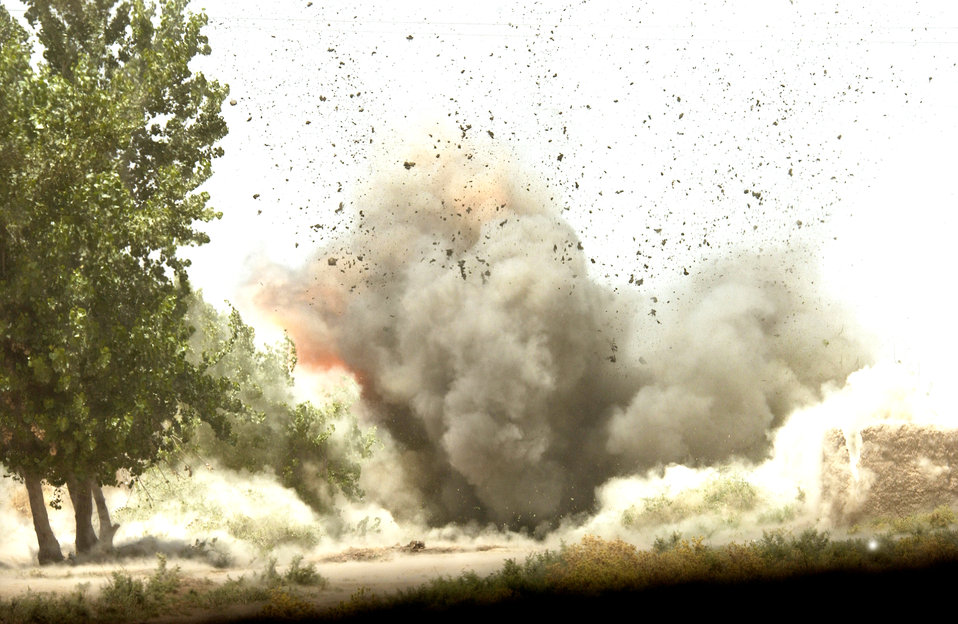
Blown

AL SHAHABI, Iraq -- A U.S. Air Force explosive ordnance disposal team blows up weapons and contraband that was found during Operation Cobra Strike. The operation was an Iraqi led mission to search for weapons and contraband in an area with suspected insurgent activity.